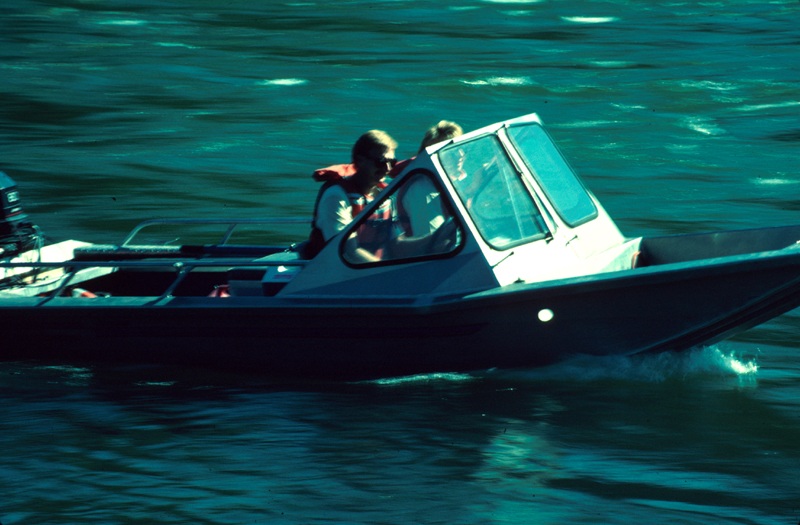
South Fork of the Snake River